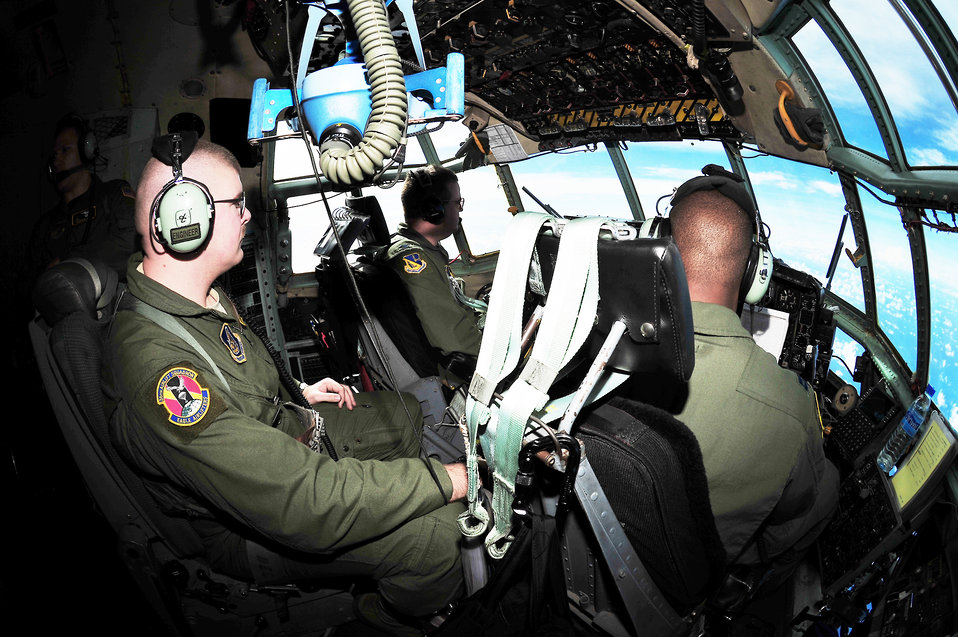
Airmen drop donated goods to islanders

Col. Mark Herring, Capt. Adam Col, and Staff Sgt. Josh Plant enjoy the view from a C-130 Hercules after dropping bundles of donated goods over the Chuuk islands during Operation Christmas Drop Dec. 16, 2009, and heading back to Andersen Air Force Base, Guam. The Airmen are deployed from Yokota Air Base, Japan. Colonel Herring is the 374th Operations Group commander and pilot, Captain Col is the co-pilot assigned to the 36th Airlift Squadron and Sergeant Plant is a flight engineer with the 36th AS.